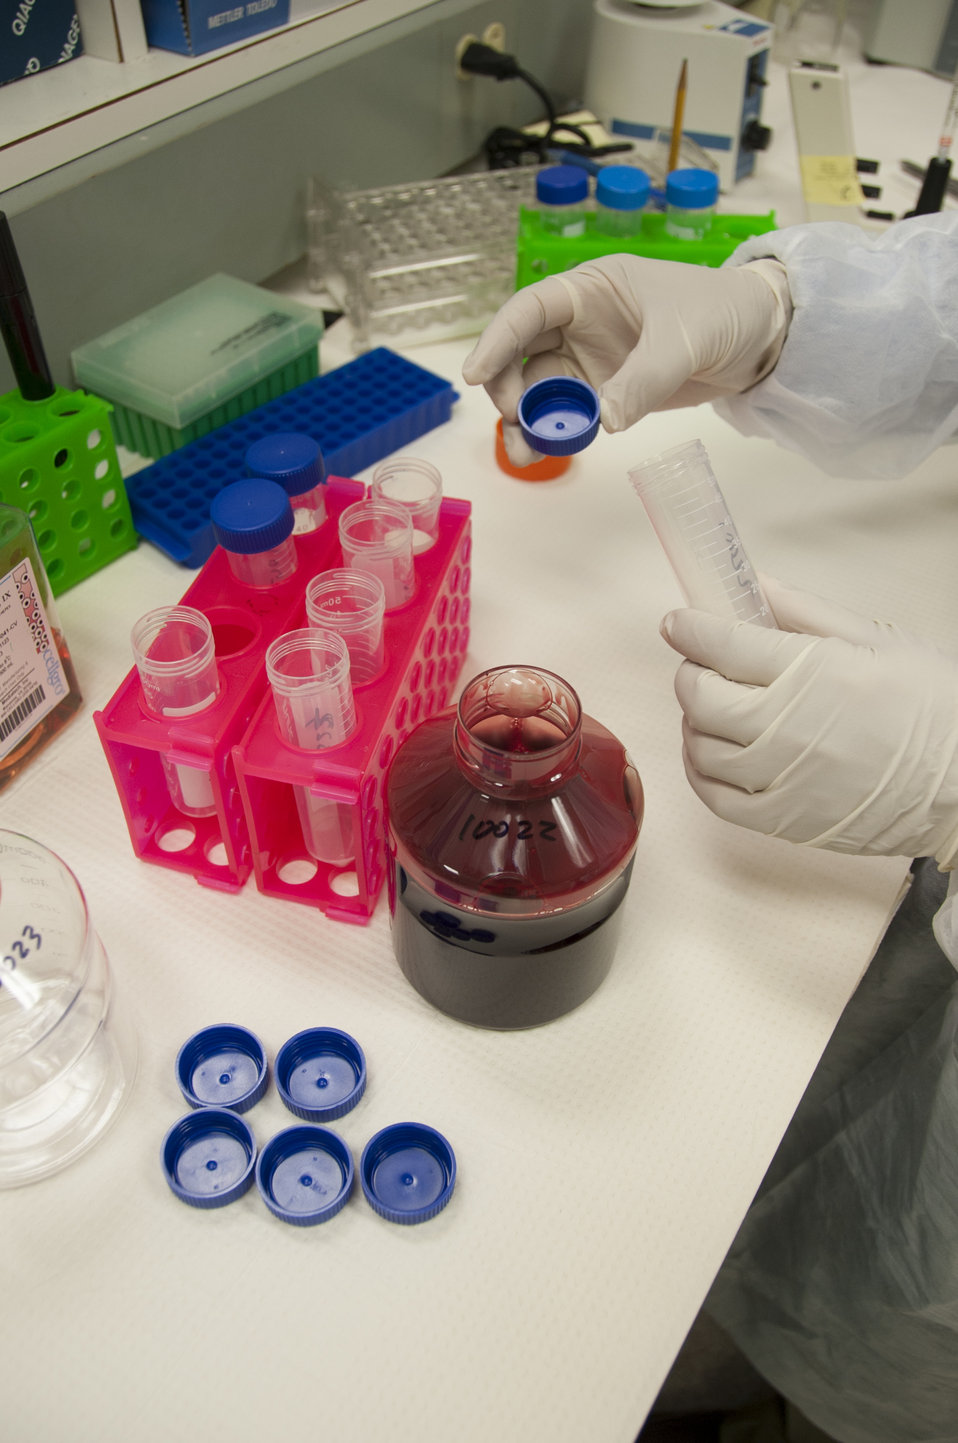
Blood Research: Saving Lives (8298)

Jason Liu, Ph.D., a laboratory chief at FDA’s Office of Blood Research and Review, prepares a 50 ml tube to process blood. FDA is responsible for the safety of our nation’s blood supply and is at the forefront of evaluating and encouraging innovative technologies for protecting it.

Read this Consumer Update to learn more: Advances in Saving Lives with Blood